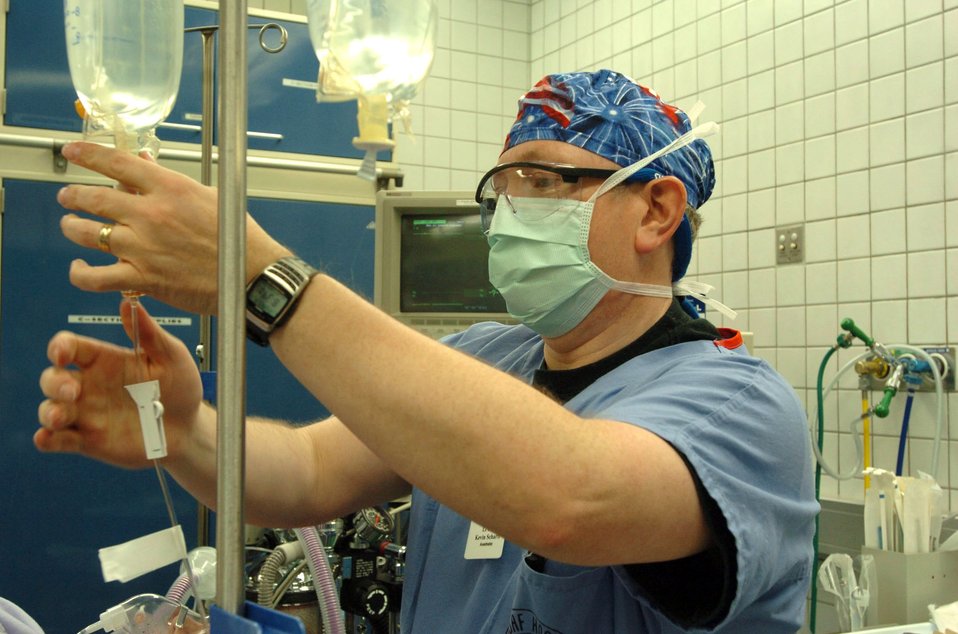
Needle little love?

SPANGDAHLEM AIR BASE, Germany (AFPN) - Lt. Col. Kevin Scharff injects medication into an IV during a scheduled Cesarean section at the Bitburg Annex Hospital Jan. 18. National Nurse Anesthetist Week kicked off Jan. 22 and goes through Jan. 28. The week honors Certified Registered Nurse Anesthetists and educates people on the importance of their work. Nurse anesthetists have been working with surgeons, dentists and podiatrists for nearly 150 years to deliver safe anesthetic care. The Bitburg hospital has three nurse anesthetists on staff who provide care to about 900 servicemembers and their families each year. The team also augments Landstuhl Army Regional Medical Center in support of Operation Iraqi Freedom. Colonel Scharff is the 52nd Medical Operations Squadron chief nurse anesthetist.